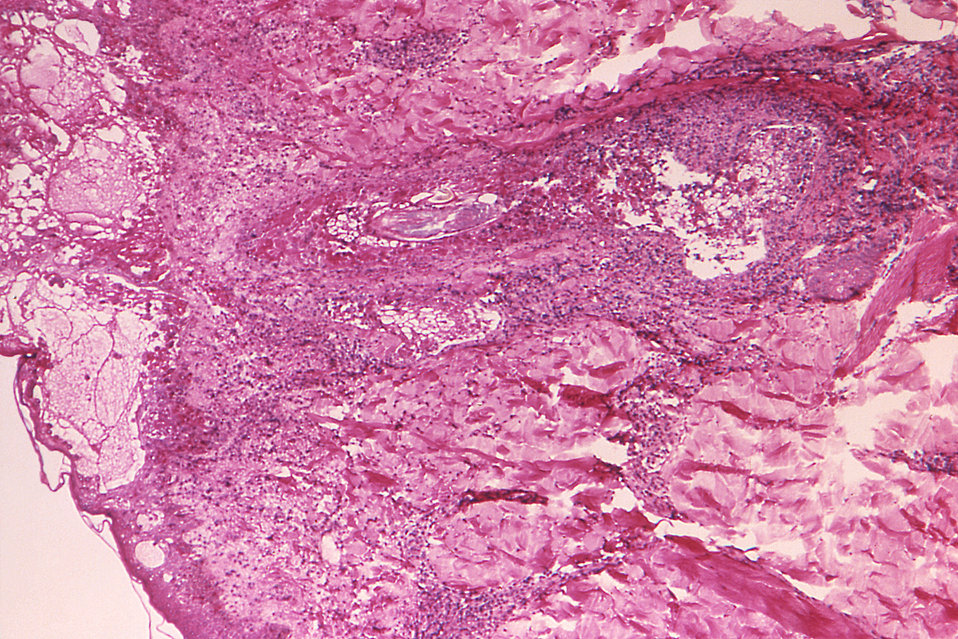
Under a relatively low magnification of 50X, this hematoxylin-eosin (H&E)-stained photomicrograph reveals some of the cytoarchitectural histopathologic changes which you'd find in a human skin tissue specimen that included a chickenpox, or varicella zoster virus lesion.